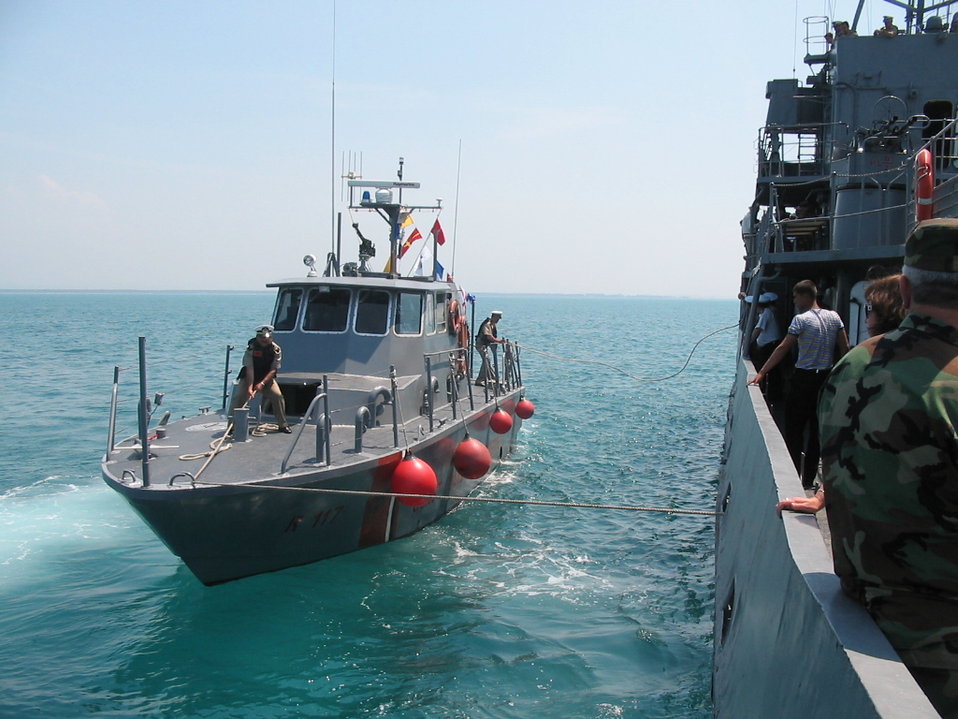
R-117 Patrol Boat PCC Class, an Italian made Patrol Craft, Coastal PCC-class used by Albanian Navy Brigade